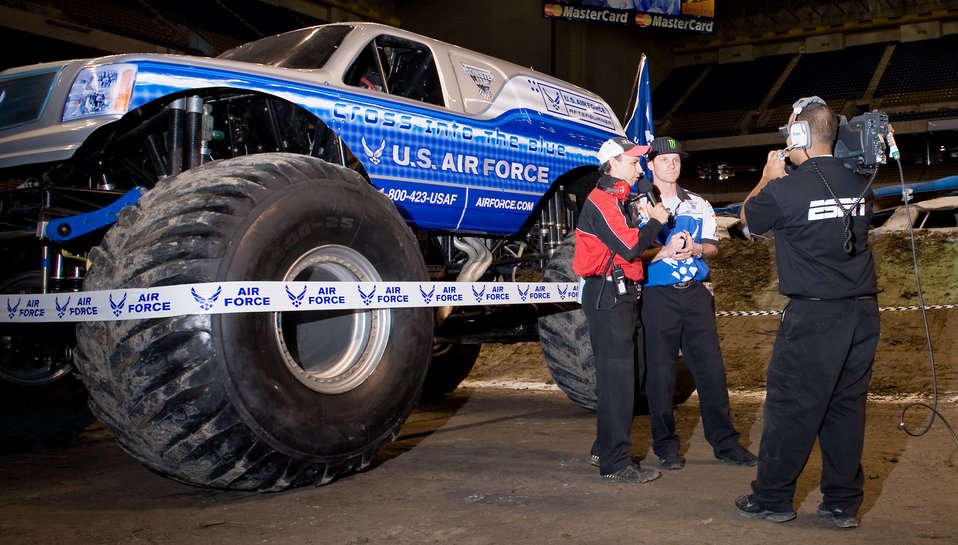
AF flies high at Monster Jam

Air Force monster truck driver Damon Bradshaw is interviewed Jan. 11 during the 2009 Monster Jam at the Alamodome in San Antonio. Driving Afterburner, Mr. Bradshaw took second with fast lap times and freestyle performances that had the crowd of approximately 45,000 up and cheering. Afterburner's 540 cubic-inch Merlin supercharged racing V-8 engine churns out 1,425 horsepower. Mr. Bradshaw, in his 3rd season, demonstrated that he had mastered the application of power by launching the 10,000-lb vehicle more than 40 feet in the air, thrilling the crowd. Afterburner is equipped with 66